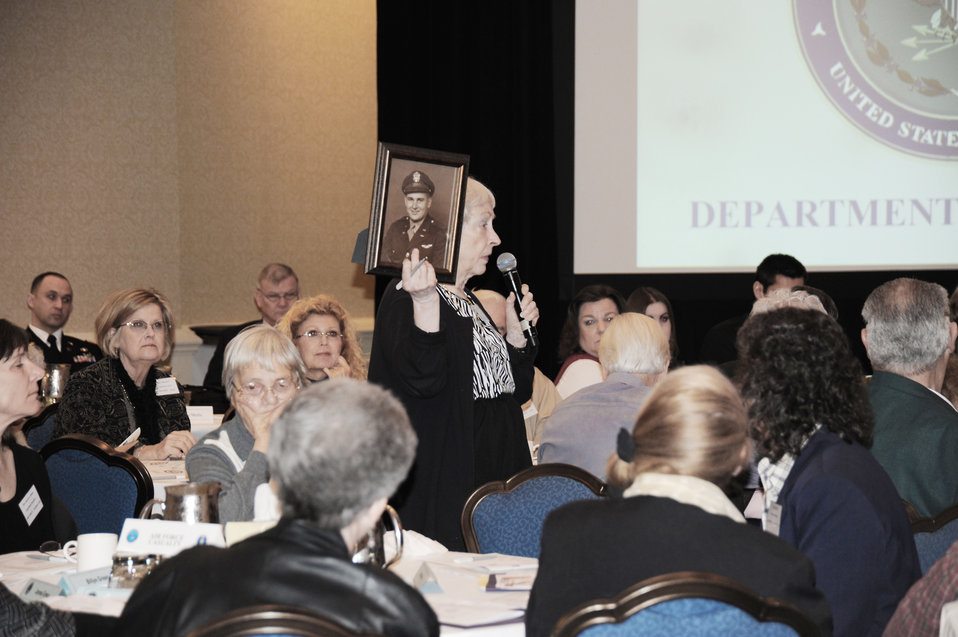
Defense POW/Missing Personnel Office staff puts pieces together for loved ones

A woman shows a photo of her father during a family update meeting sponsored by the Defense Prisoner of War/Missing Personnel Office March 20, 2010, in San Antonio.